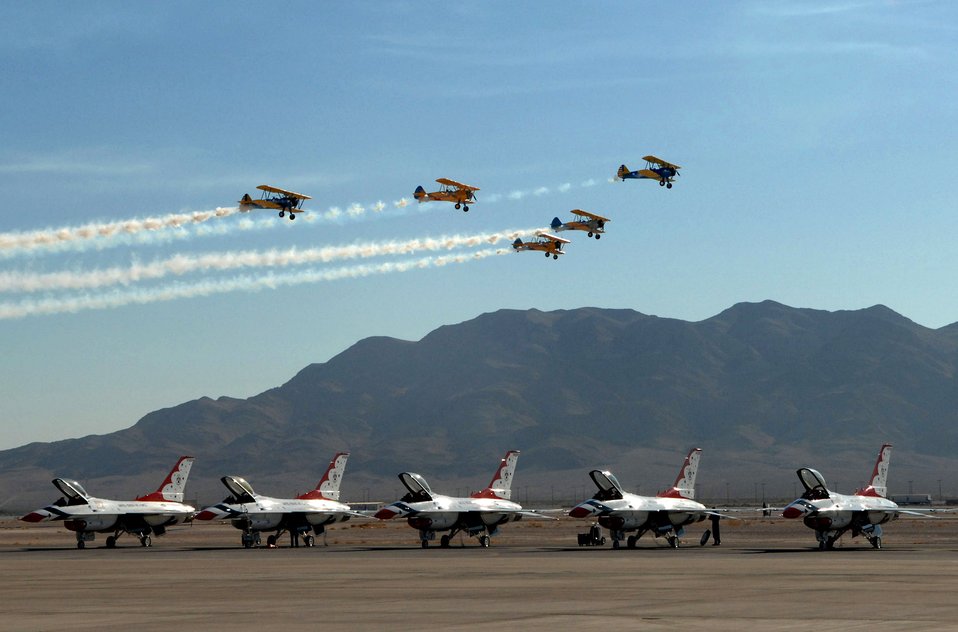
The old shows the new

Five vintage aircraft put on their own aerial demonstration as the Air Force Thunderbirds wait their turn Nov. 10 during the Aviation Nation Air Show at Nellis Air Force Base, Nev. Aviation Nation is one of the largest air shows in North America.